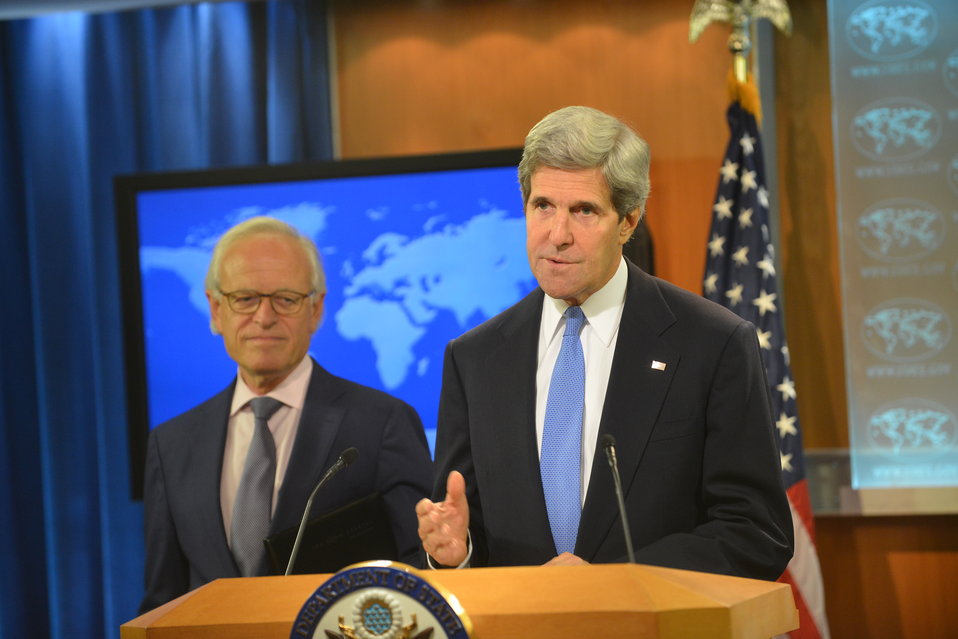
Secretary Kerry Names Ambassador Indyk as Special Envoy for Israeli-Palestinian Negotiations

U.S. Secretary of State John Kerry announces that Ambassador Martin Indyk will serve as the U.S. Special Envoy for Israeli-Palestinian Negotiations at the U.S. Department of State in Washington, D.C., on July 29, 2013.